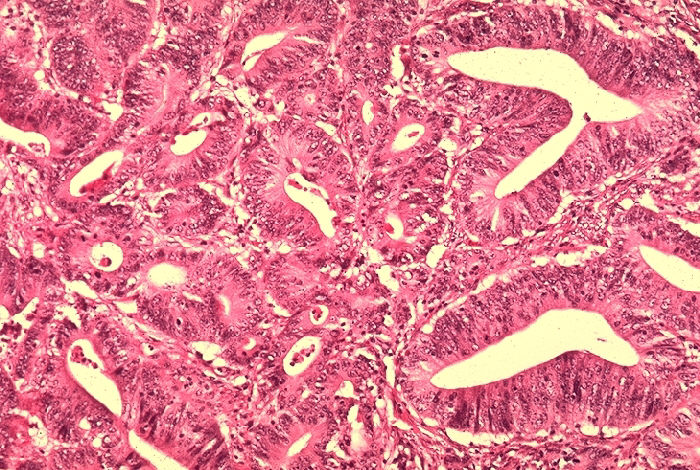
Histopathology of adenocarcinoma, colon.